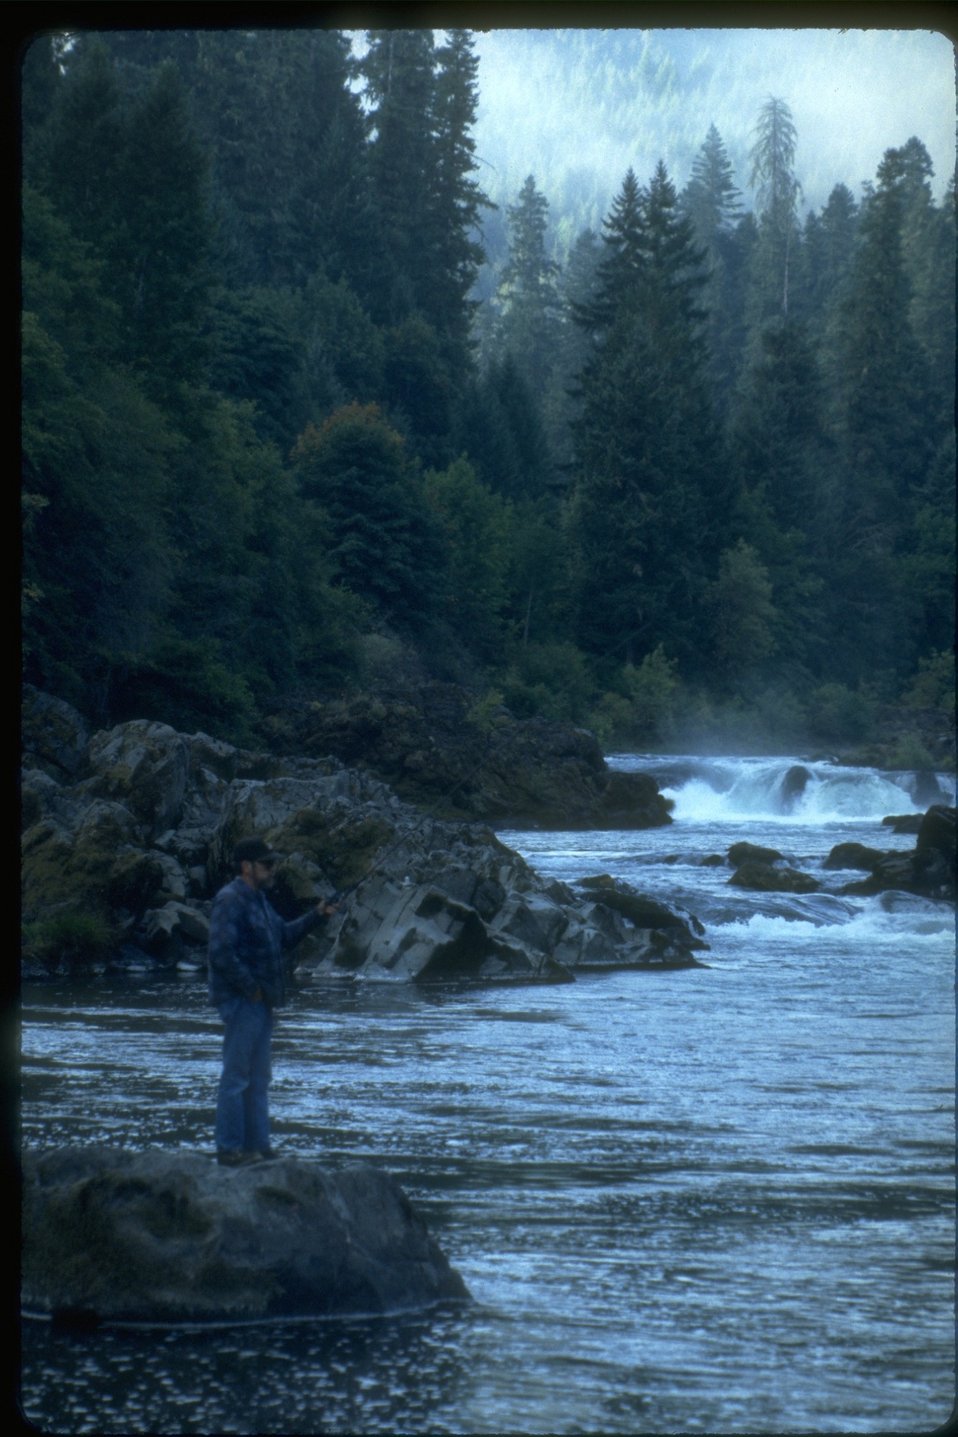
Fisherman on the North Umpqua River.